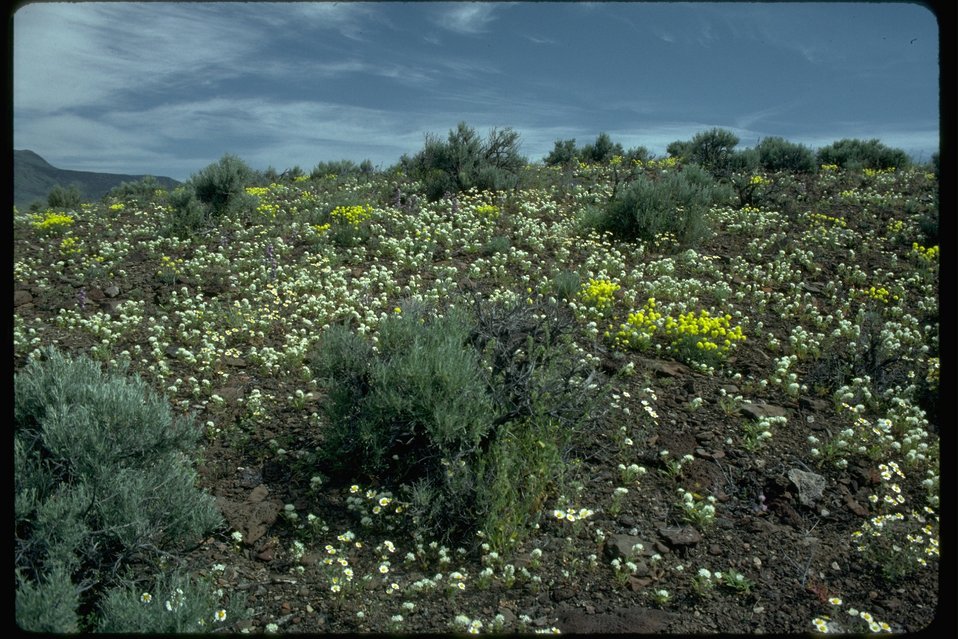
A wildflower show in the Sheephead Mountains east of Steens Mountain in Southeastern Oregon.